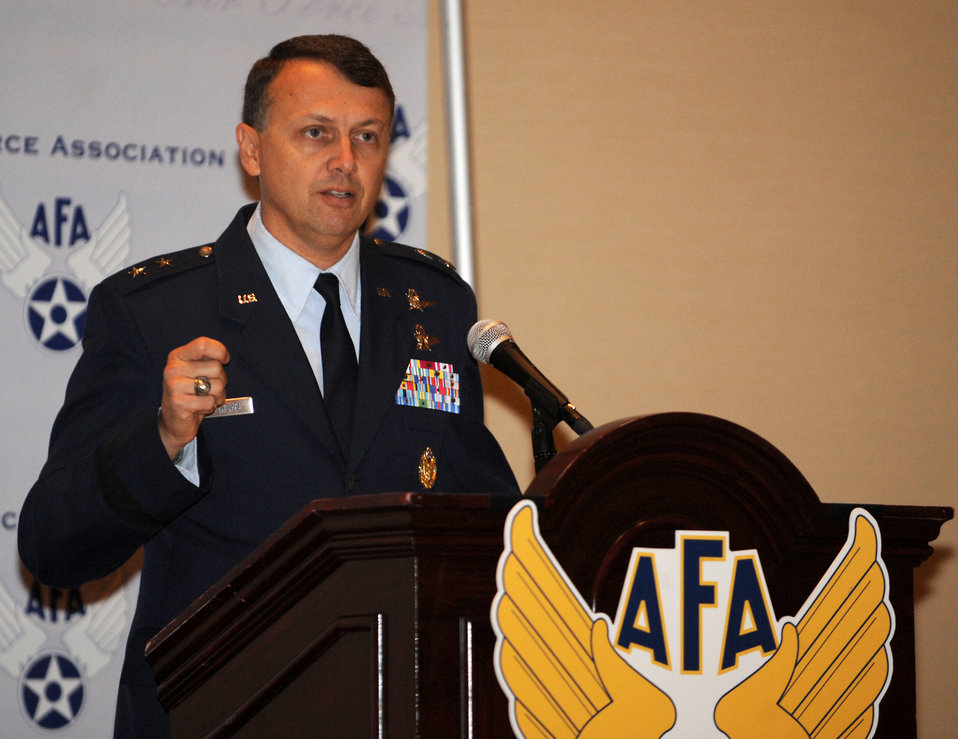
Air Force officials outline cyber capabilities in today’s fight

Maj. Gen. Earl D. Matthews spoke to attendees at the Air Force Association's annual Air and Space Conference and Technology Exposition in Washington, D.C., Sept. 18, 2012. Mathews discussed the Air Force's cyber capabilities and their importance in the joint fight. Matthews is the director of Cyberspace Operations for the Office of Information Dominance and the chief information officer with the Office of the Secretary of the Air Force.